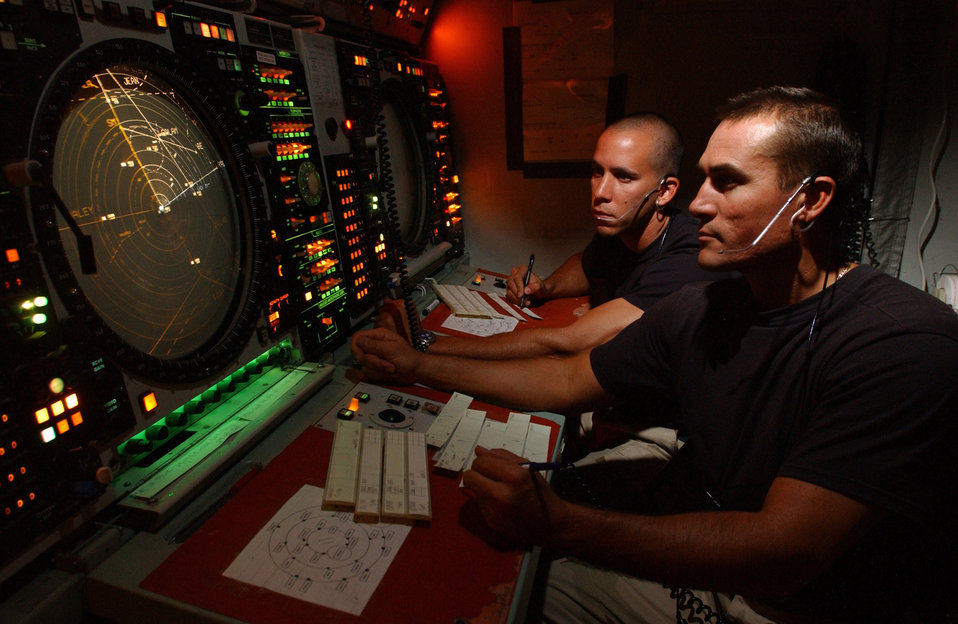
Eyes on the sky

BAGHDAD, Iraq -- Staff Sgts. Jose Pastrada (front) and Bryan Herrington control the airspace around Baghdad International Airport. The airmen are air traffic controllers assigned to the 447th Expeditionary Operations Support Squadron here. They are deployed from Kadena Air Base, Japan.